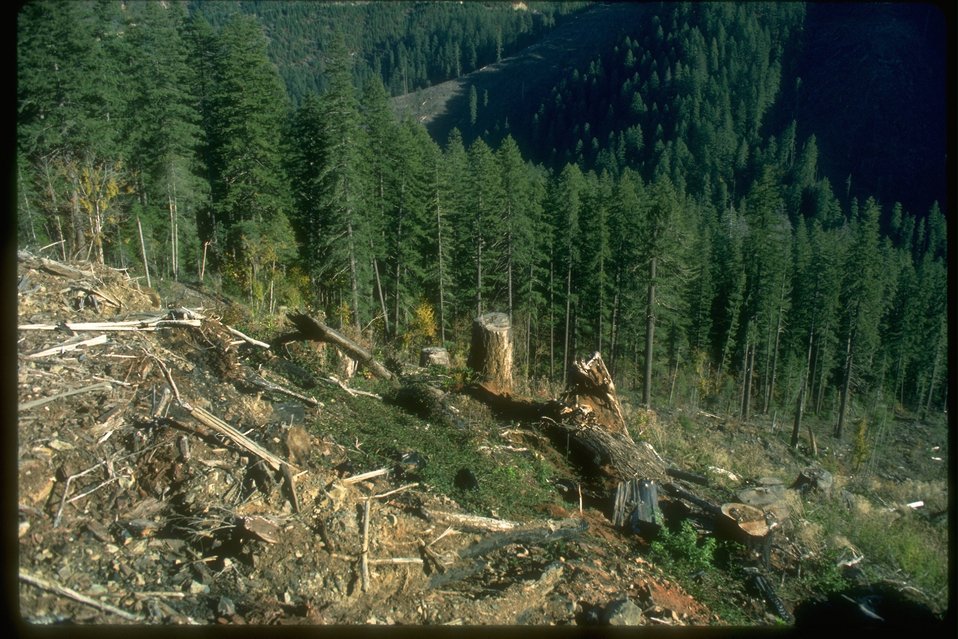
View of a clear cut site.